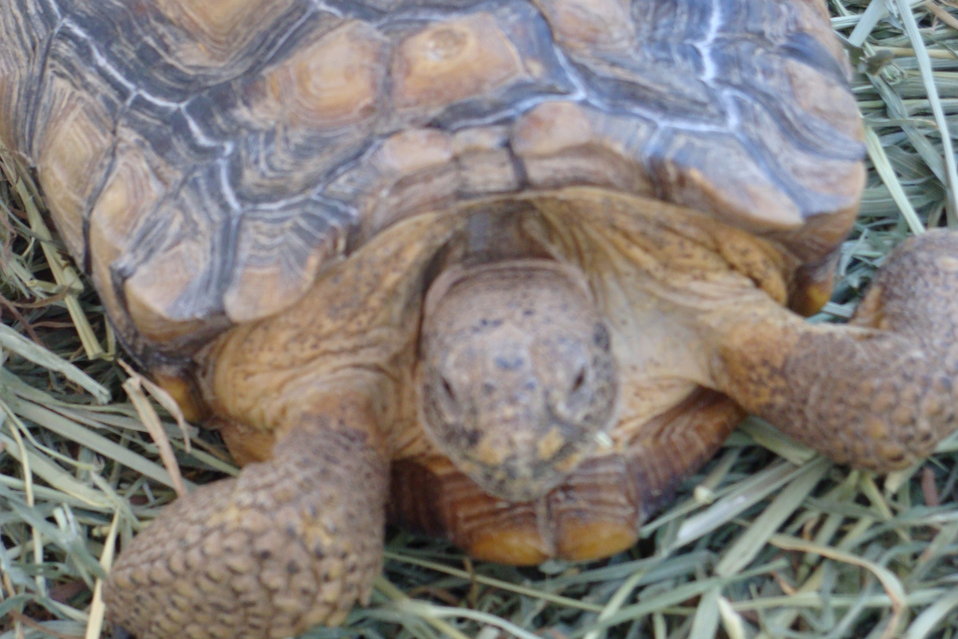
Mojave Desert Tortoise

The U. S. Fish and Wildlife Service has announced the availability of a Revised Recovery Plan for the threatened Mojave population of the desert tortoise (Gopherus agassizii) under the Endangered Species Act (ESA). The Plan takes a new approach to reversing declines in Mojave desert tortoise populations through a coordinated effort of science-based implementation and evaluation of conservation actions.

Unlike the previous Recovery Plan, which focused on mitigation measures, this Plan recognizes the need to adjust to the accelerating pace of environmental change and its impact on key resource management issues, such as corridors and connectivity. The Plan will be a living document that advances a natural resource management model where ongoing detection of changes and attribution of causes will provide the basic information on whether or not the desert tortoise or its ecosystem is changing beyond natural variability.

By continuous examination of vulnerability, exposure, sensitivity, and adaptive capacity of the desert tortoise to environmental change, resource managers will be able to update the Plan as it is being implemented with conservation measures that will help the desert tortoise recover.